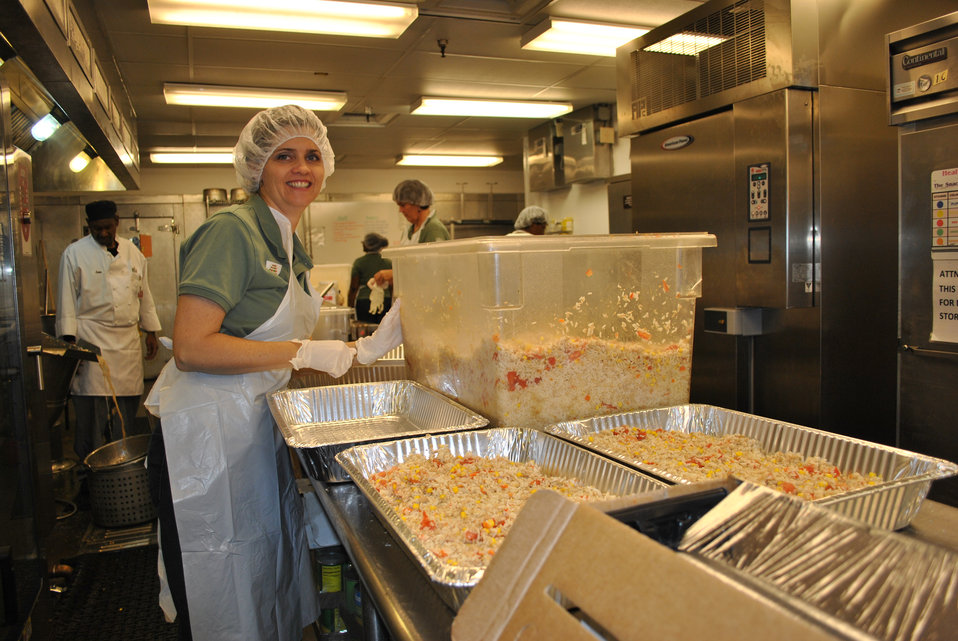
U.S. Department of Agriculture (USDA) Foreign Agricultural Service (FAS) volunteer Kelly Hauhn spoons Spanish rice into trays, which are then labeled for delivery.